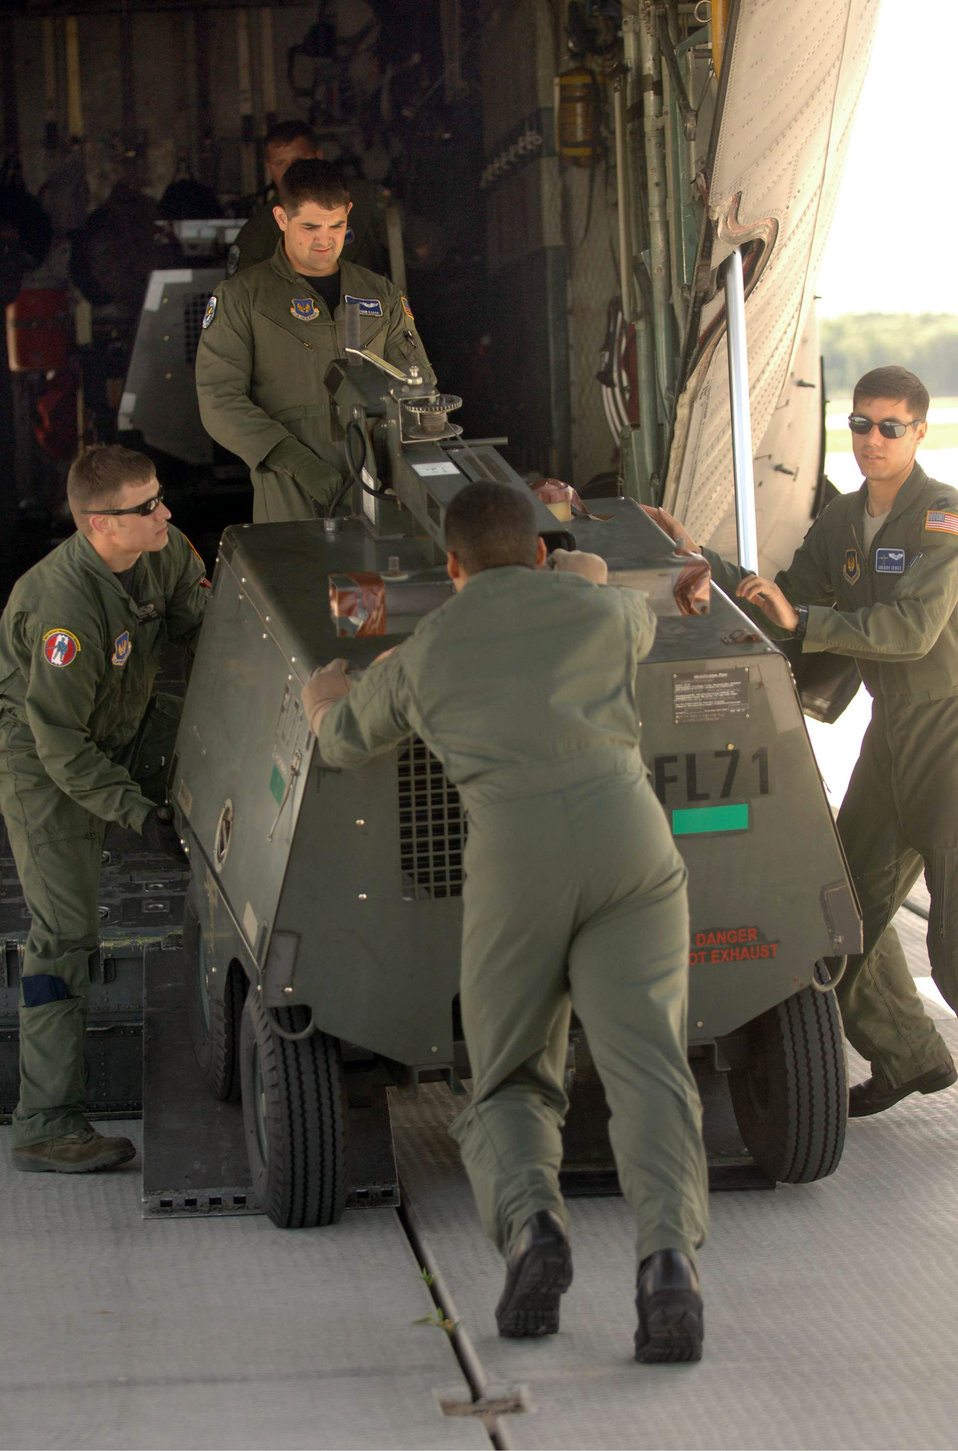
Easy does it!

Airman 1st Class Jason Ricke (left) unloads a portable light cart from a C-130 Hercules with assistance from (clockwise from top) Capt. Jon Esses, Capt. Greg Zency and Staff Sgt. Edward Lewis July 3 at Moscow's Vnukovo International Airport. The aircraft and crew are assigned to 37th Airlift Squadron and delivered the equipment in support of the presidential visit to Russia.